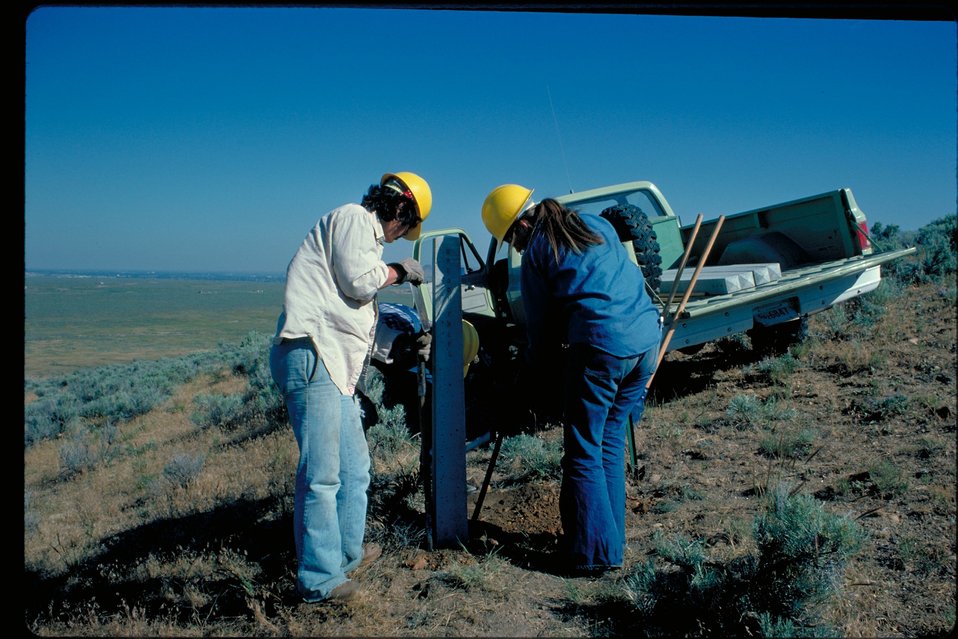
YCC Placing Oregon Trail Monument Oregon Trail Lower Snake River District